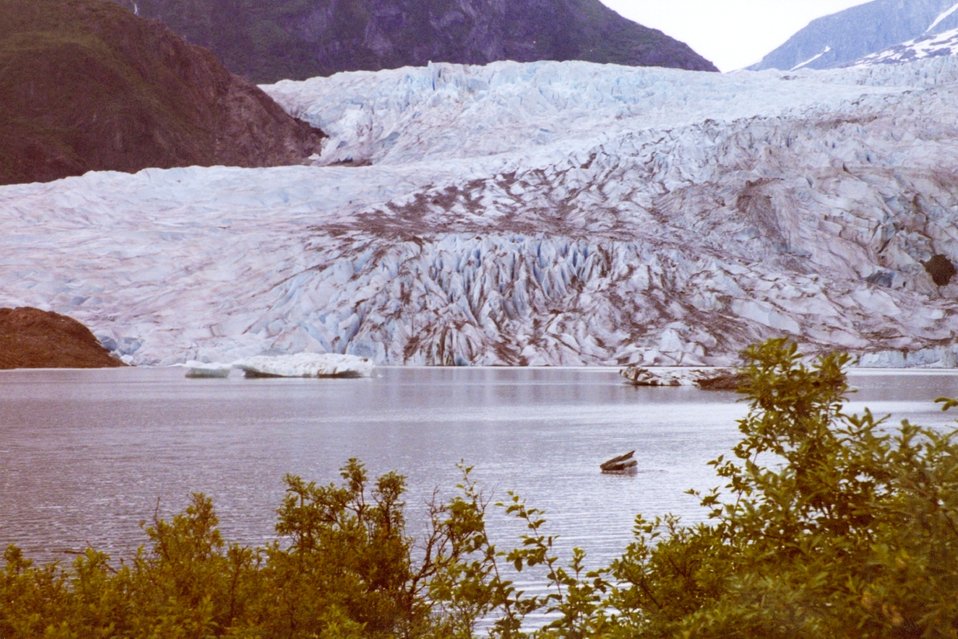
Mendenhall Glacier